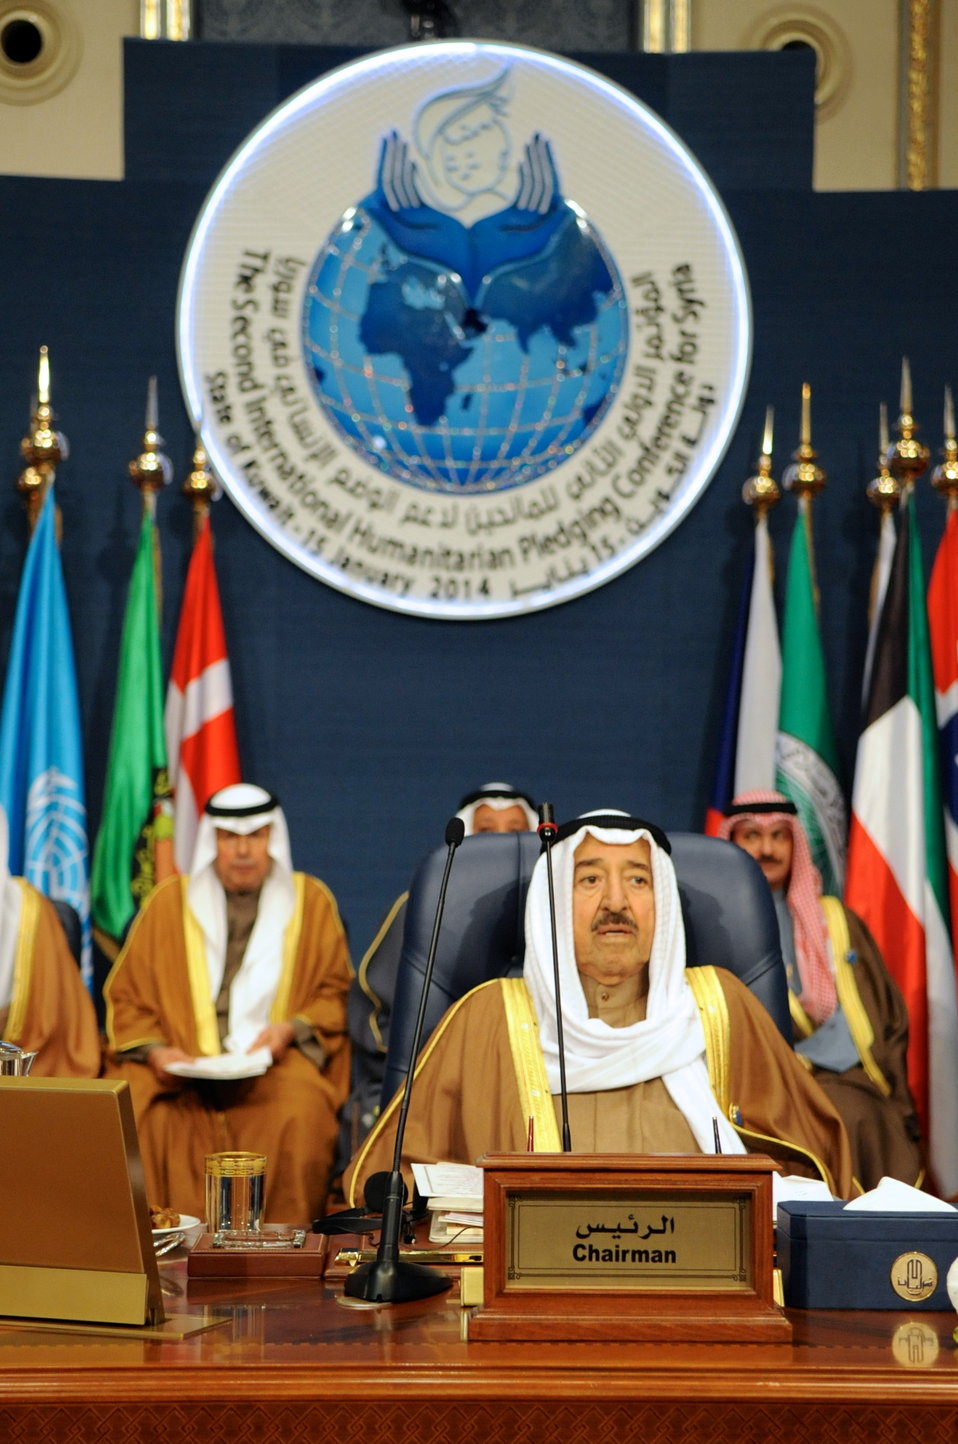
Kuwaiti Amir Pledges $500 Million at Outset of Syrian Donors' Conference

Amir Sheikh Sabah al-Ahmed Al Sabah of Kuwait sits before the start of the Syrian Donors' Conference in Kuwait City on January 15, 2014, which he kicked off with a pledge of $500 million.